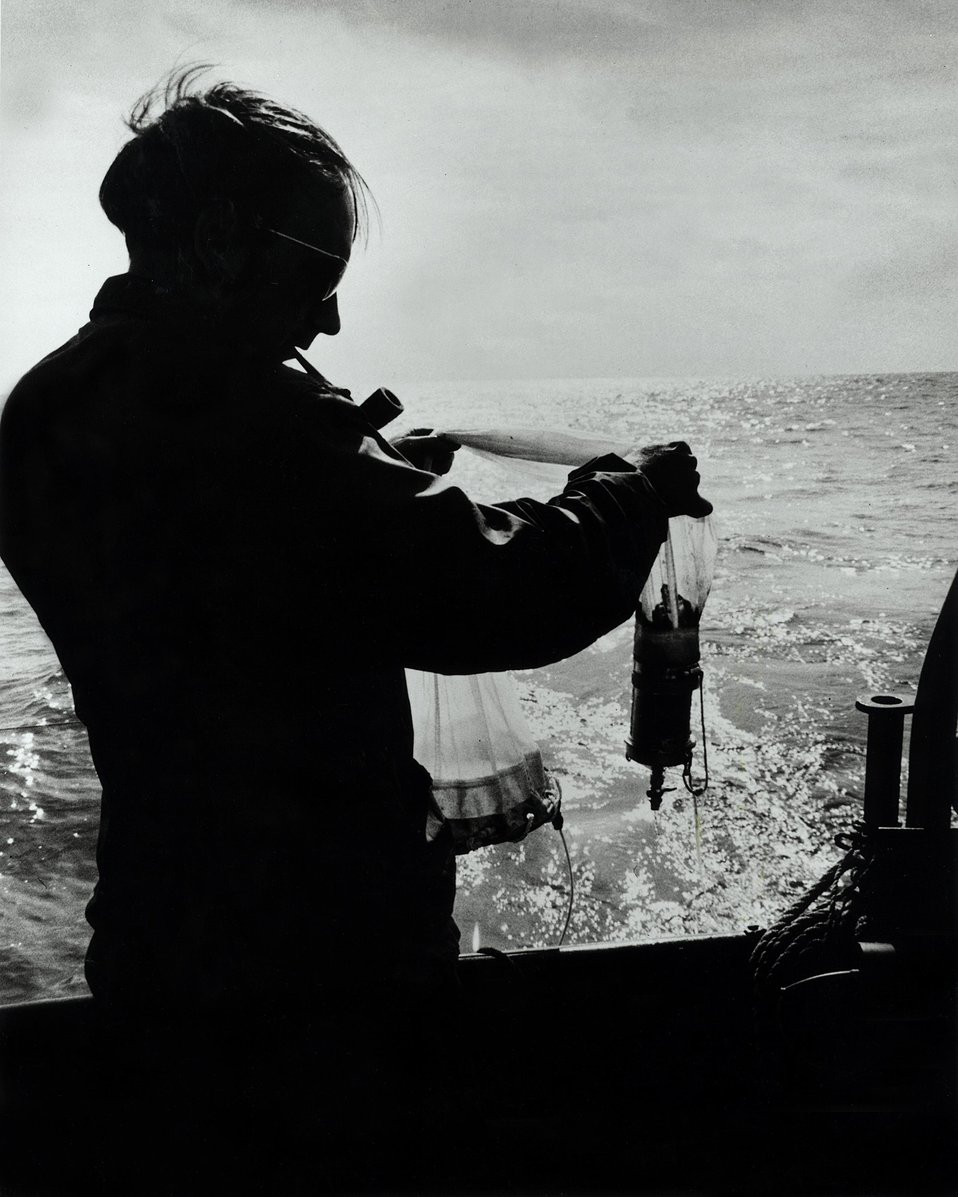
A limnologist from Argonne brings aboard a plankton sample gathered by towing a specially developed net through the water for several miles.